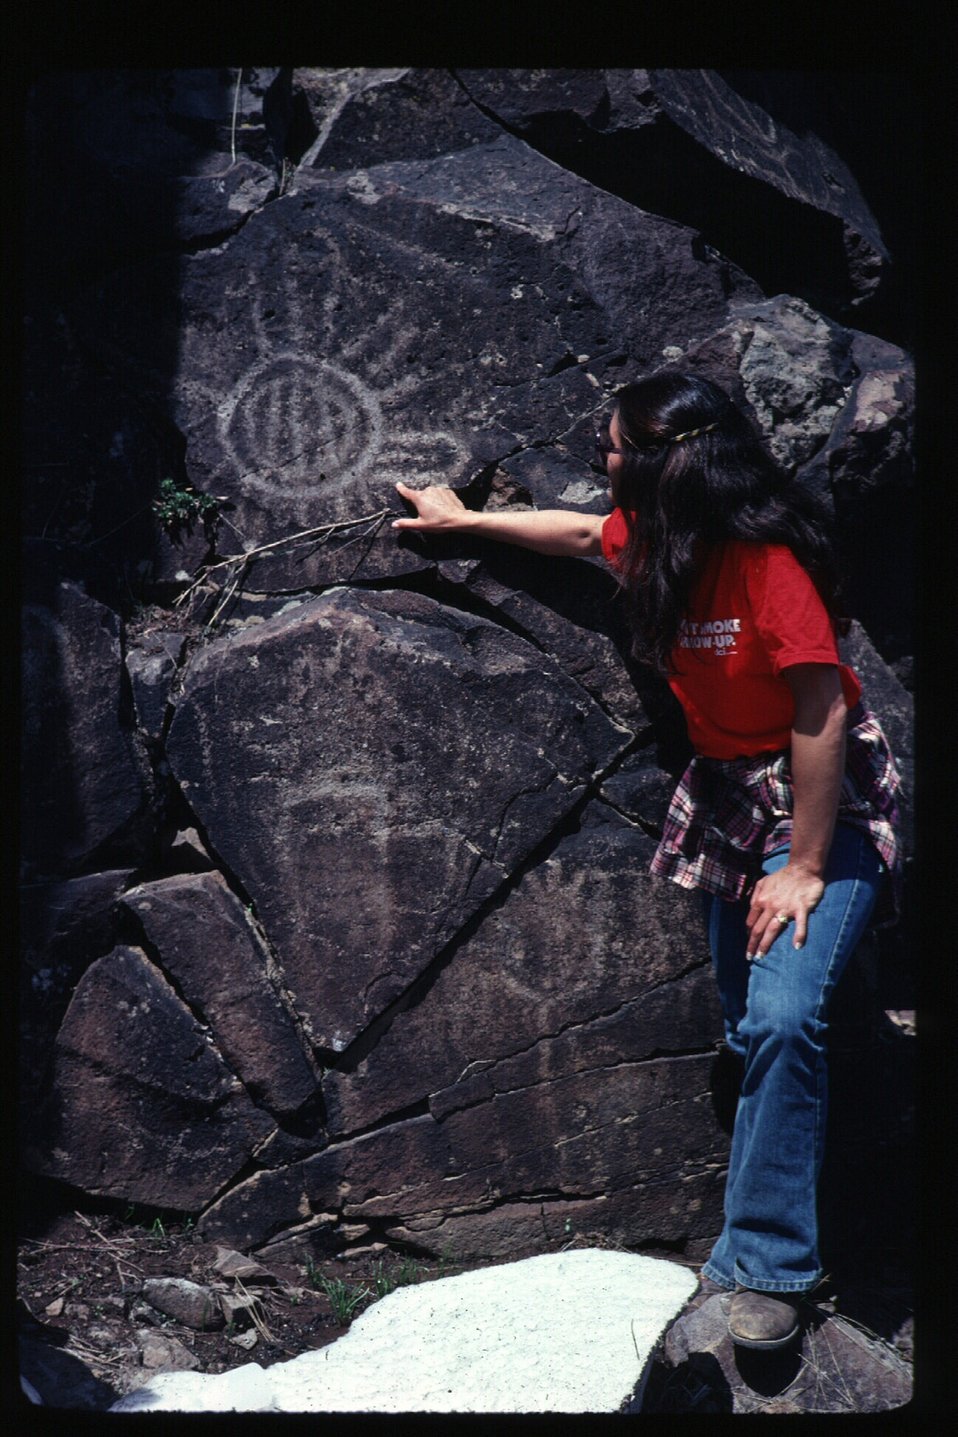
Cultural Resources Petroglyphs LSRD Lower Snake River District